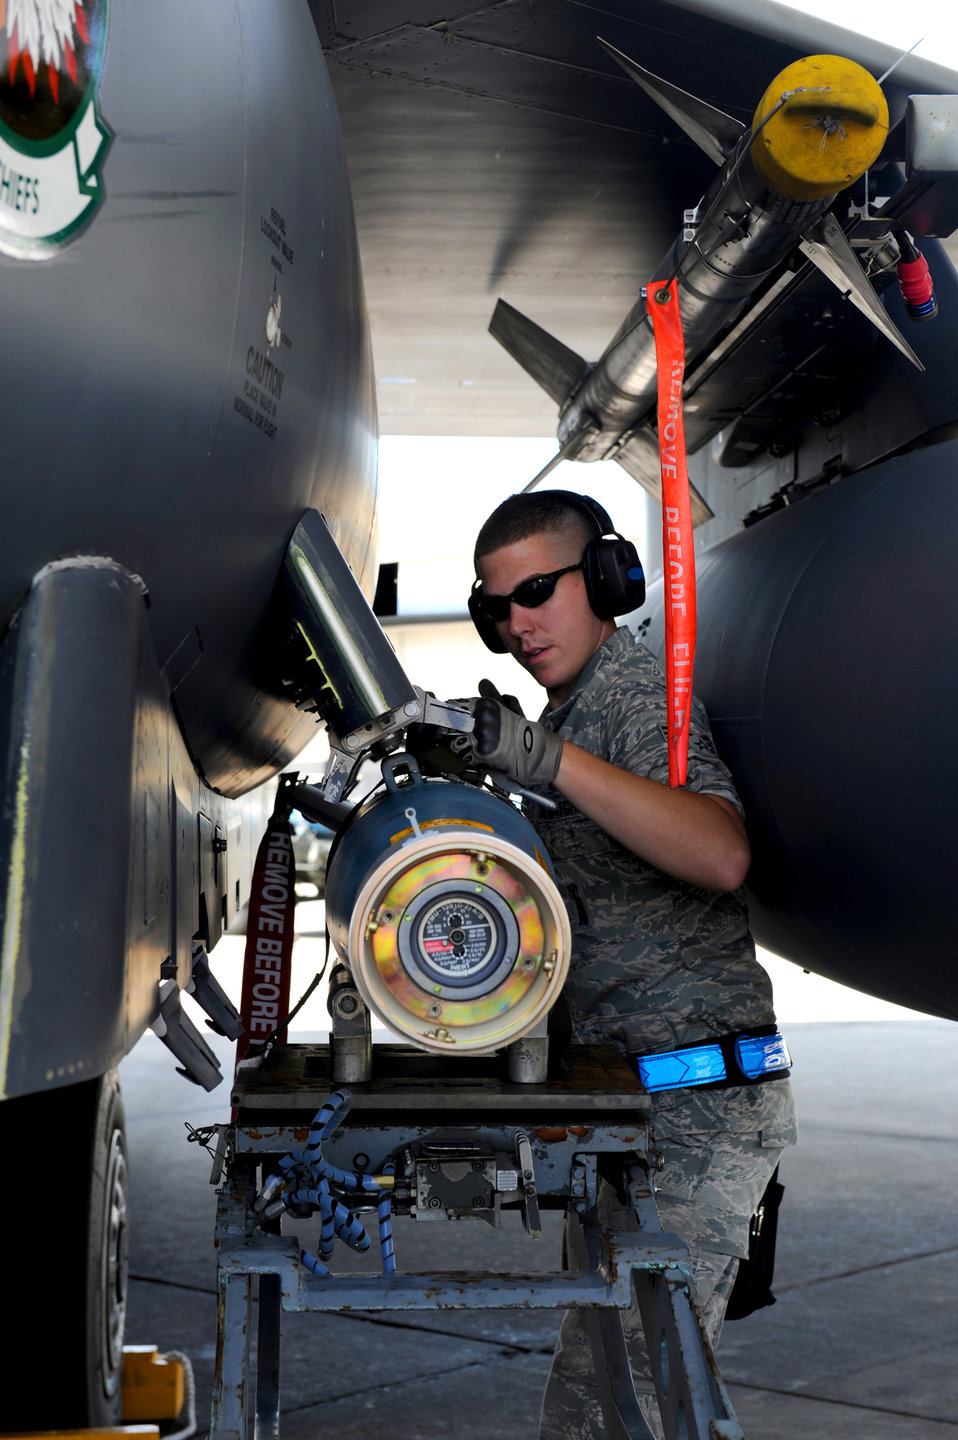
Careful and quick

Senior Airman Cody Jurgensmeyer prepares to attach a GBU-12 munition to an F-15E Strike Eagle at Seymour Johnson Air Force Base, N.C. June 8, 2010. As part of the operational readiness regeneration effort, Airman Jurgensmeyer led a three-person load team to quickly arm the aircraft for its next sortie.